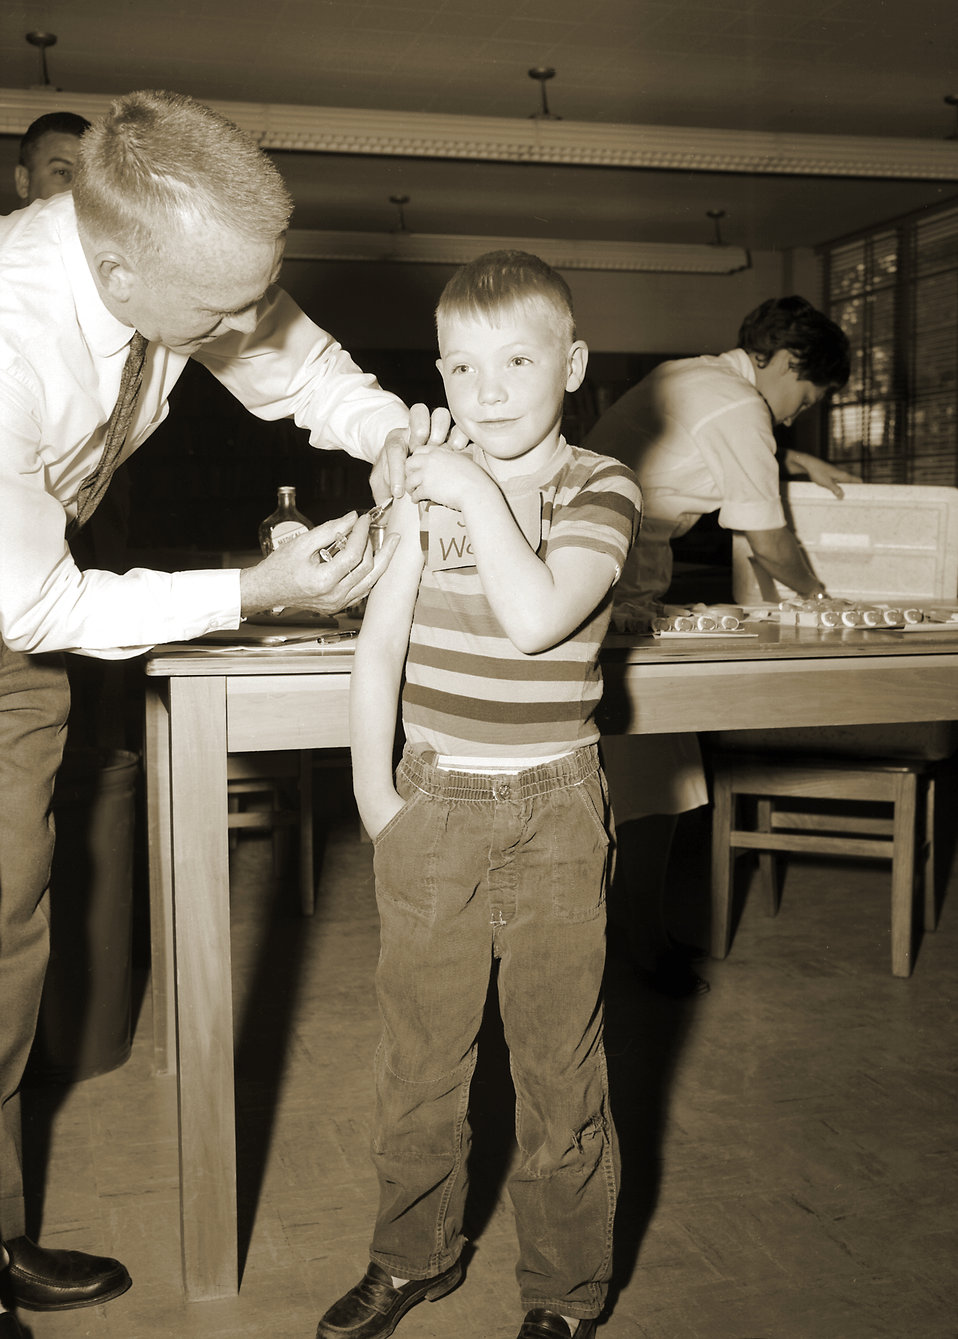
A 1962 photograph of a boy receiving a measles vaccination.